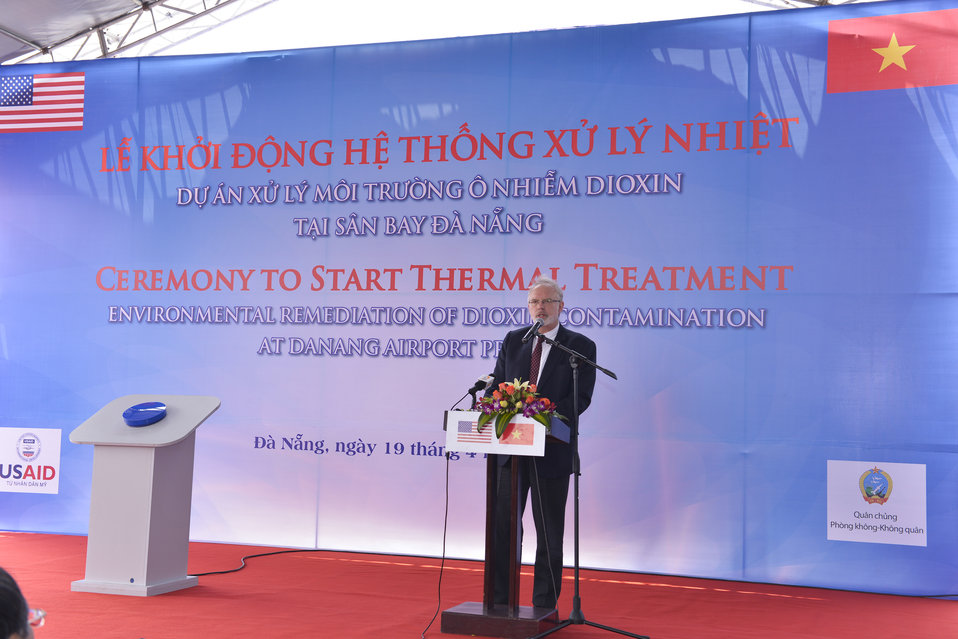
U.S. Ambassador David Shear speaks at the ceremony to turn on treatment system at Danang Airport

Danang, April 19, 2014.